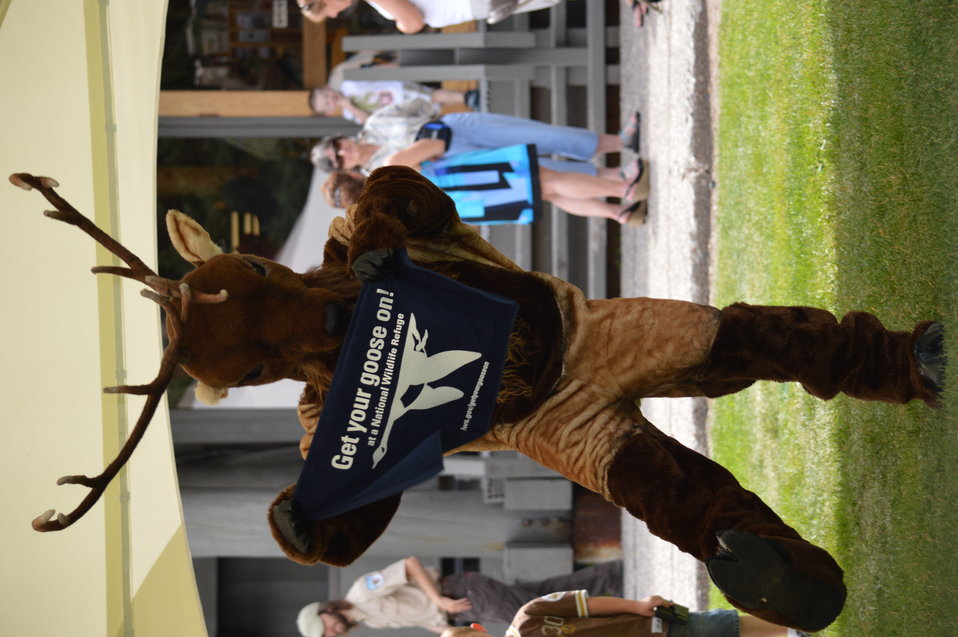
Get Your Goose On! - National Elk Refuge Style

On August 10, 2012 the U.S. Fish and Wildlife Service and Partners celebrated the 100 year anniversary of the establishment of the National Elk Refuge. In these photos, young attendees, along with Puddles the Blue Goose and the National Elk Refuge's mascot, showed us how to Get Your Goose On! with style.